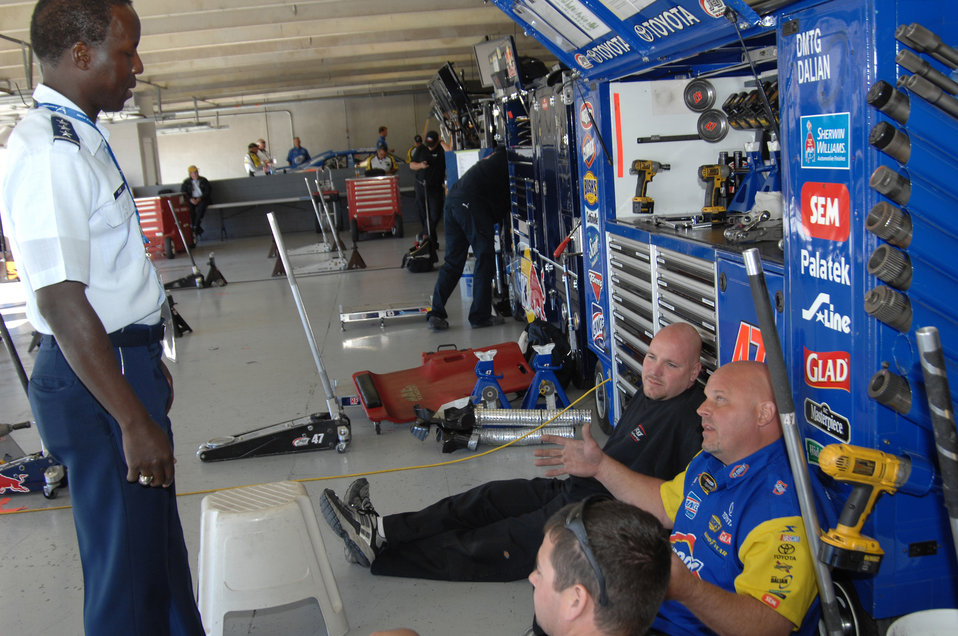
General Rice at Texas Motor Speedway

Lt. Gen. Edward A. Rice Jr., incoming commander of Air Education and Training Command, speaks with pit crew members at Texas Motor Speedway Nov. 7, 2010, before the NASCAR Sprint Cup Series race. The general, who has been confirmed for his fourth star, conducted a swearing-in ceremony for Delayed Enlistment Program members, and met members of the Air Force's No. 19 NASCAR team.